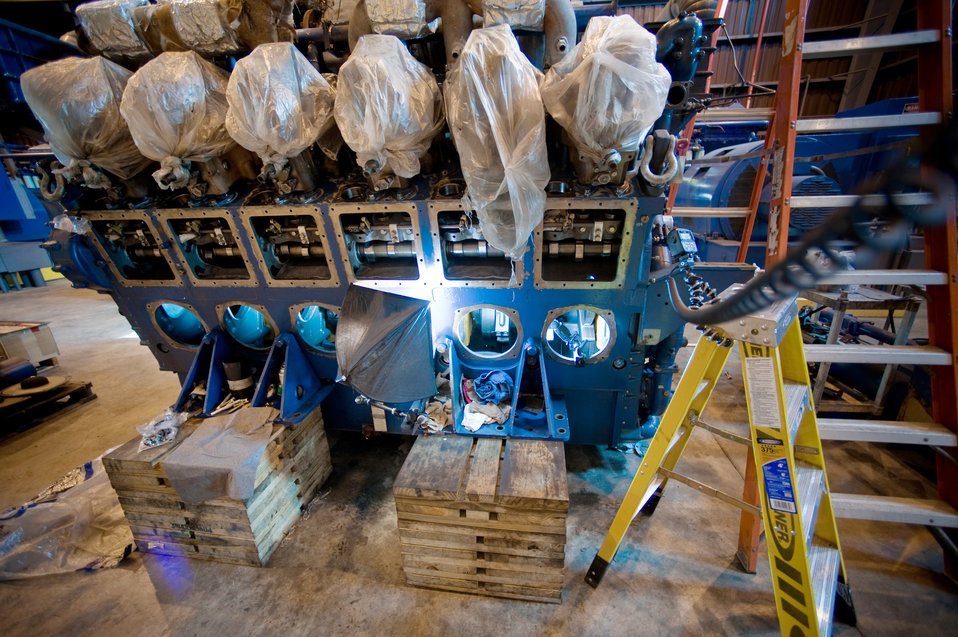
Ascension Island Green Way

To photograph a mechanic in an engine took 1 Nikon D3 digital camera body, a 14 mm ultra wide lens, one big engine, 1 wireless flash controller,1 off-camera TTL cord, 3 wirelessly controlled flashes,